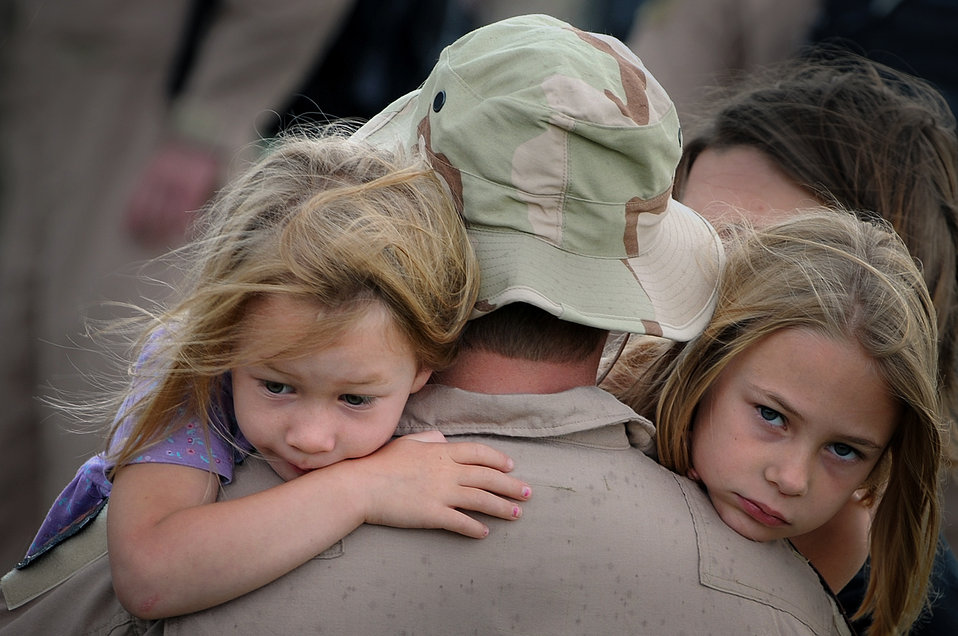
I'll be back soon

1st. Lt. William Jacks hugs his daughters Rachel (left) and Anna July 22 at Ellsworth Air Force Base, S.D., before deploying. Lieutenant Jacks is a B-1B Lancer pilot assigned to the 34th Bomb Squadron.